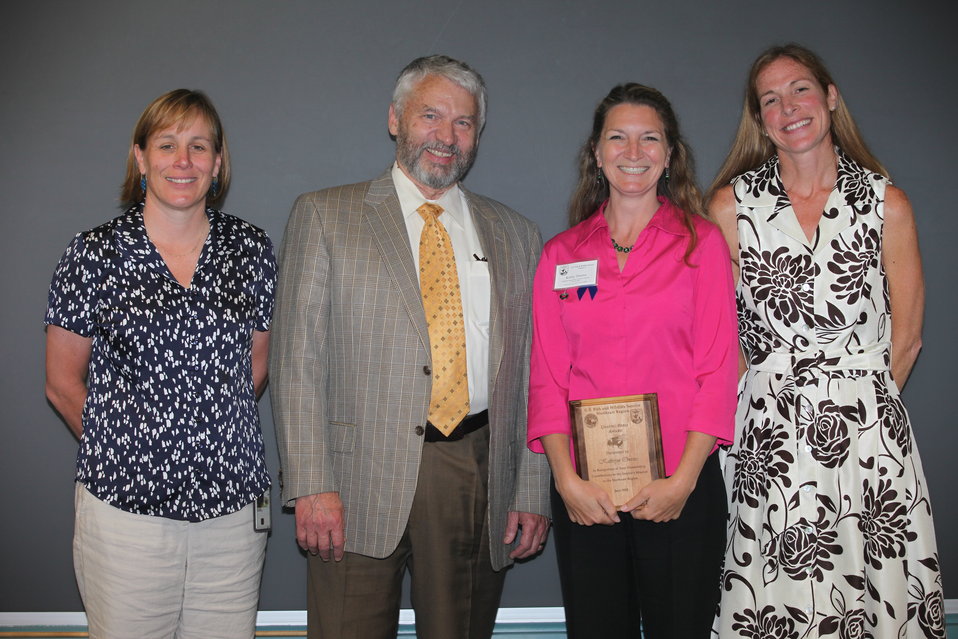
Kathryn Owens of Back Bay National Wildlife Refuge was awarded a Region 5 Unsung Hero Award.
From left to right: Deputy Regional Director Deb Rocque, Deputy Director Rowan Gould, Kathryn Owens and Regional Director Wendi Weber